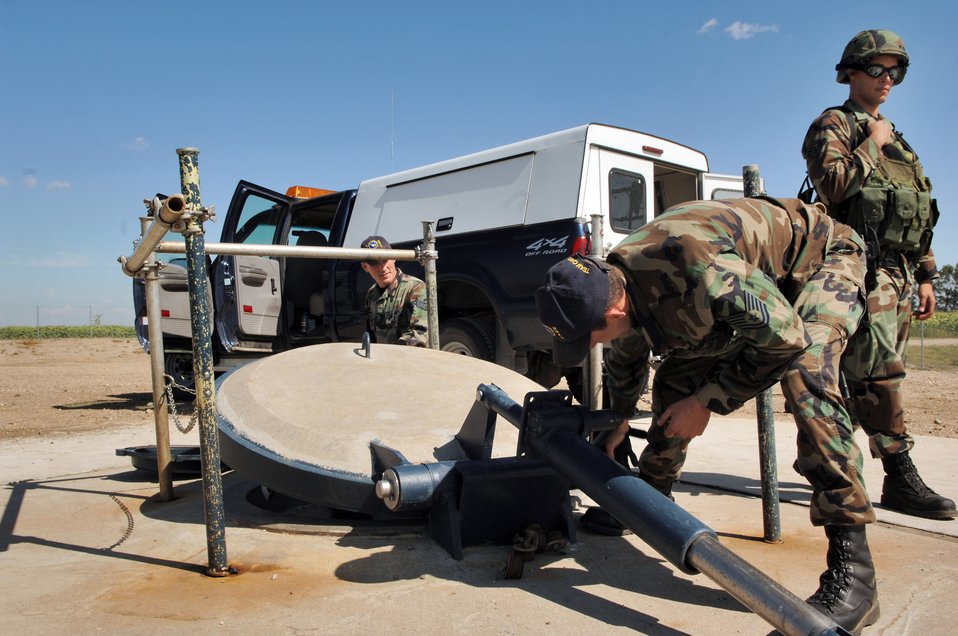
Working 'down in the hole'

Tech. Sgt. Adam Chandler (center) lowers a reinforced cement protective lid to the personnel access tube while Airman 1st Class Christopher Ramirez (right) keeps an eye on security at a Minuteman III intercontinental ballistic missile launch facility Aug. 25. Security is accomplished with a multi-ton plug that seals the passageway and uses vault-style steel pins to lock it into place. The Airmen are missile handling and security team members with the 91st Missile Wing at Minot Air Force Base, N.D.